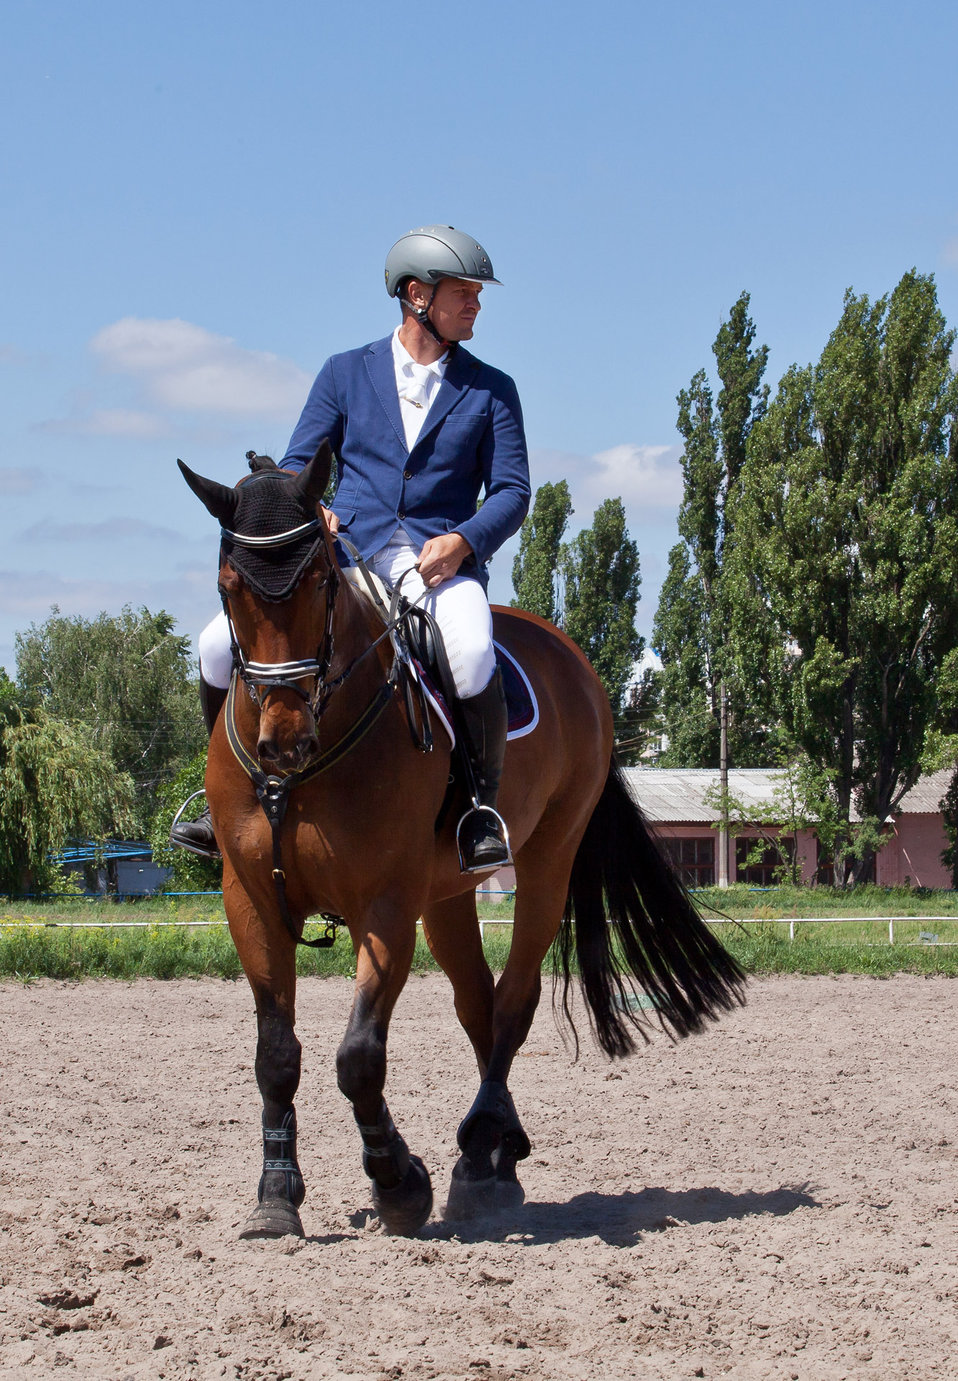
Horse,rider on a horse.